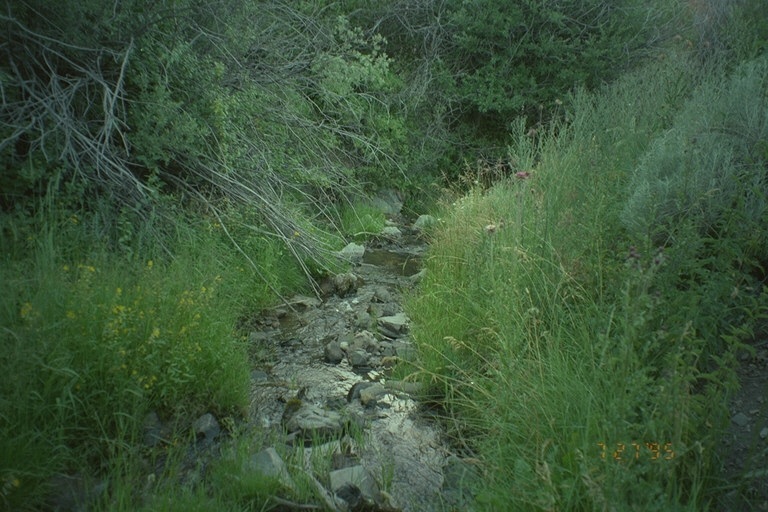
Riparian area Public Lands Salmon Field Office UCSC Upper Columbia Salmon Clearwater District